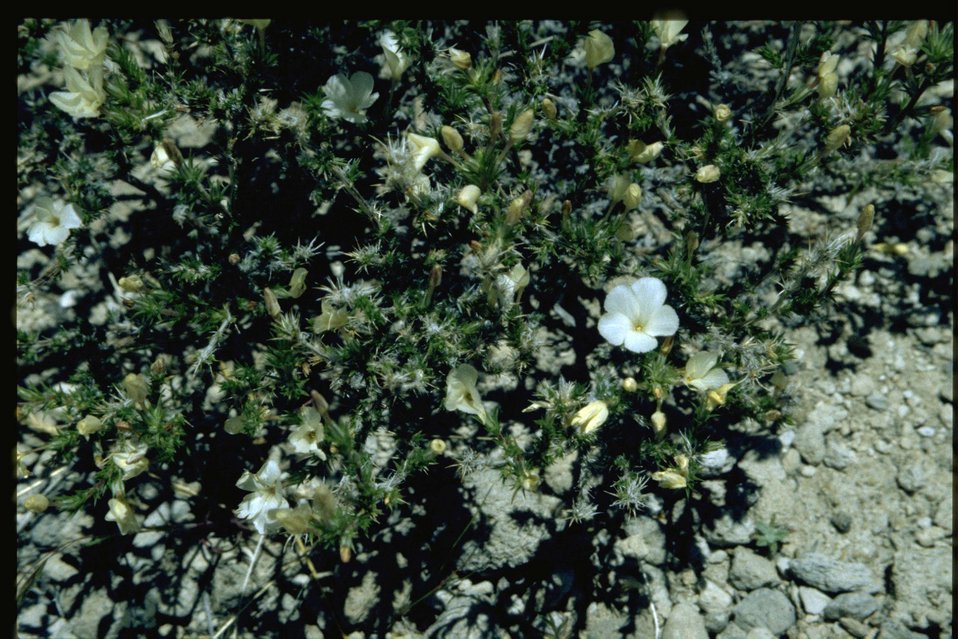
Far shot of phlox habitat.